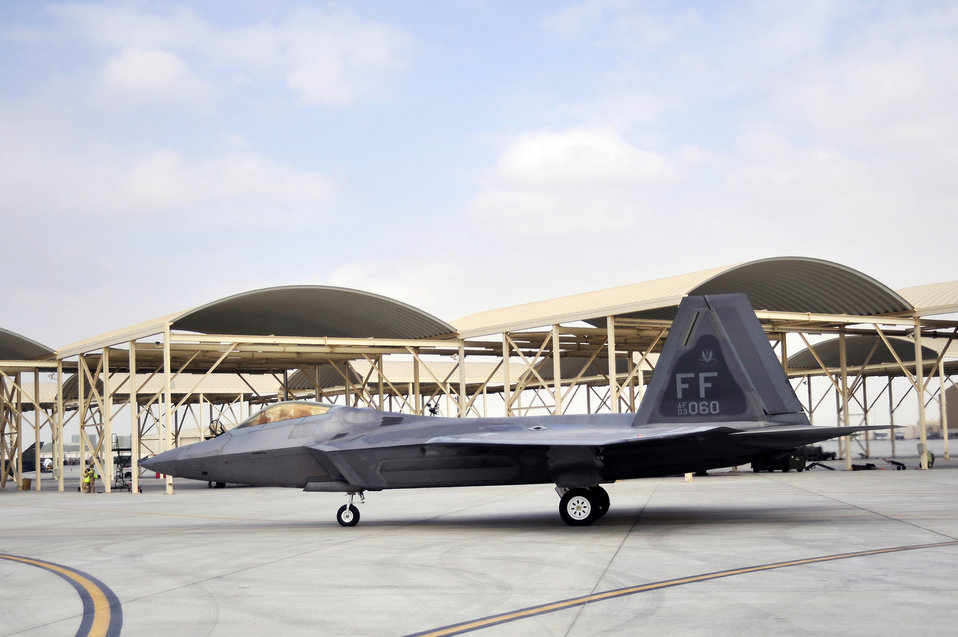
Raptors fly in Iron Falcon

Capt. Matthew Howard, 1st Fighter Wing pilot, taxis an F-22 Raptor to the runway for take-off Nov. 30, 2009. Captain Howard is participating in the Iron Falcon exercise while on temporary duty in Southwest Asia from Langley Air Force Base, Va. Captain Howard hails from Warrensburg, Mo.